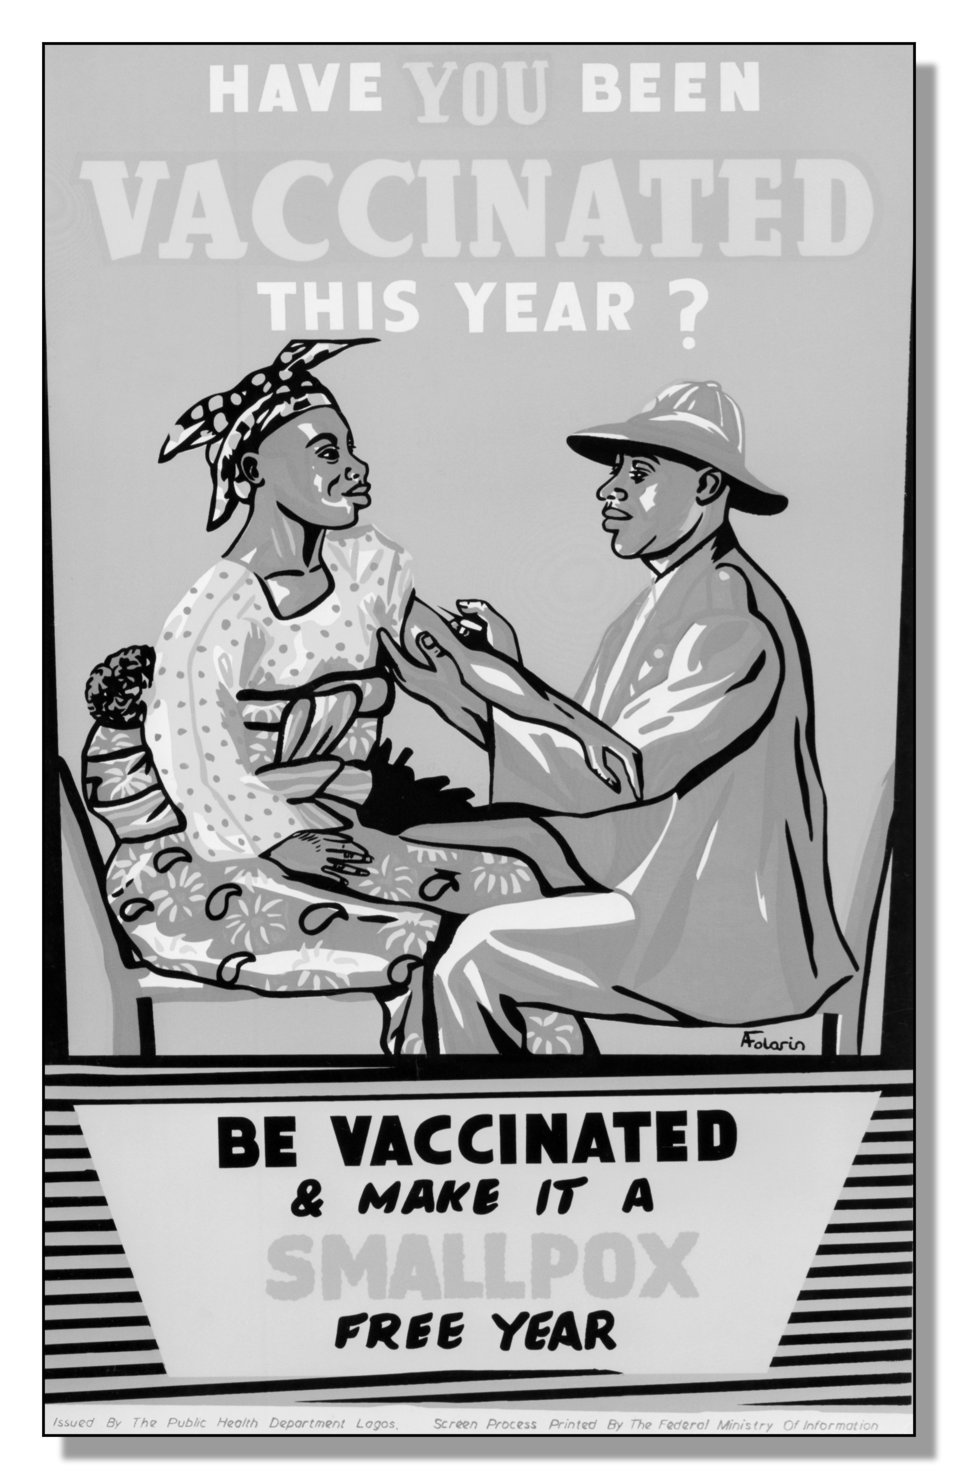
Early pre-1979 poster from Lagos, Nigeria promoting the importance of Smallpox and Measles vaccinations.